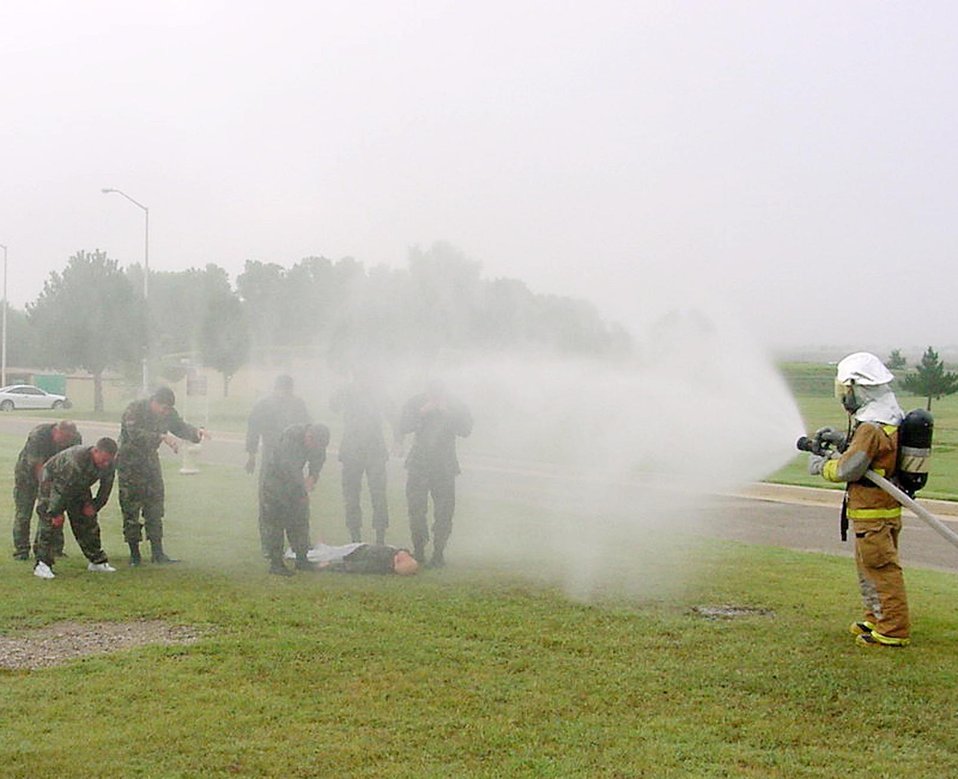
Trainees test backpack water pouches

LACKLAND AIR FORCE BASE, Texas -- Trainee Latoya Warren drinks water from a canteen as Trainee Mike Thomas sips water from a tube leading to his backpack water pouch. They are in the third week of basic military training in the 322nd Training Squadron and are part of a yearlong study to determine which method of drinking water is more beneficial.